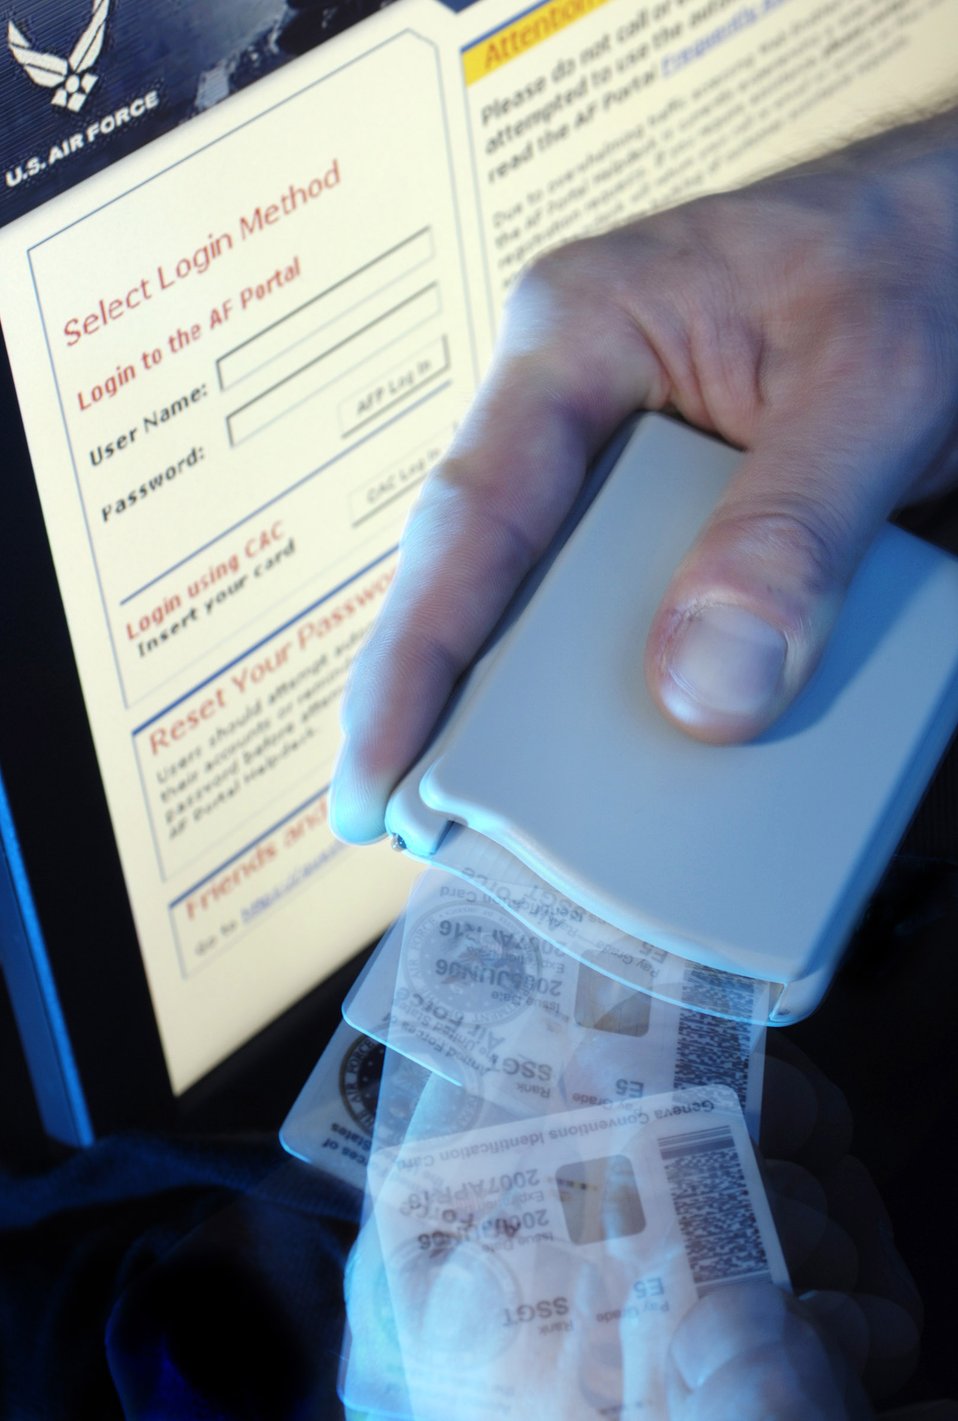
CAC OK for Portal

WASHINGTON -- Users can now log on to the Air Force Portal using their common access card and personal identification number.